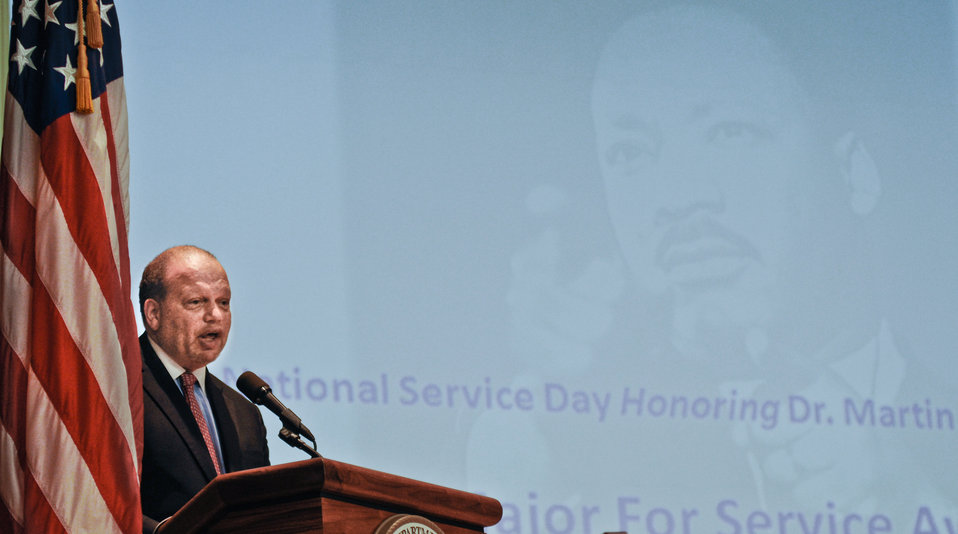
Professor of Law, Columbia University of Law Theodore Shaw speaks at the U.S. Department of Agriculture (USDA) Dr. Martin Luther King, Jr. National Service Day presentation of the Drum Major for Service Awards at the USDA Jefferson Auditorium, Washington, D.C., on Tuesday, Jan. 15, 2013.